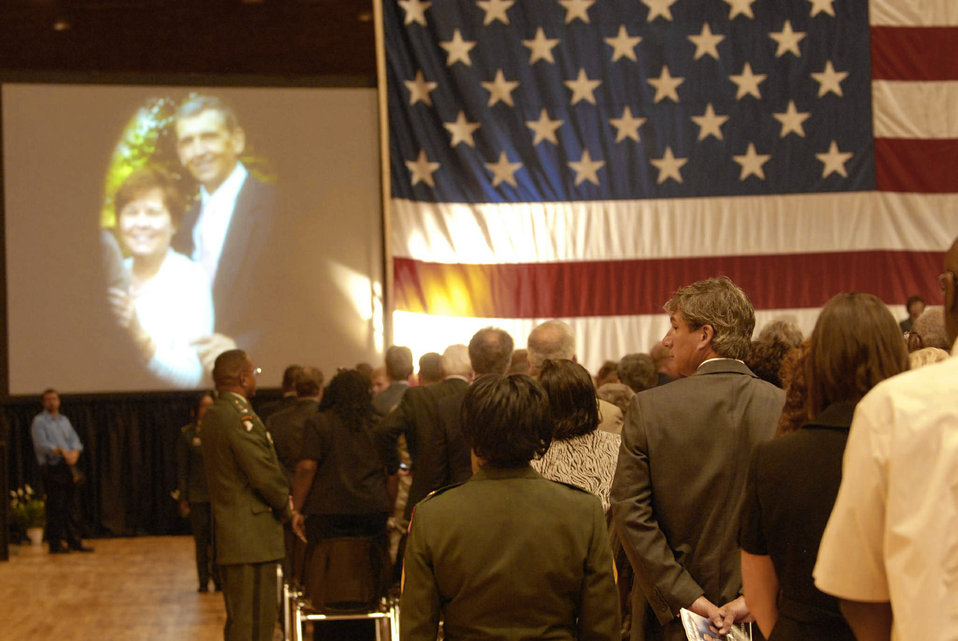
Couple remembered as 'best this nation has to offer'

Air National Guard members, friends and family gather at the D.C. Armory June 29 in Washington, D.C., to remember retired Maj. Gen. David Wherley, the former commanding general for the D.C. National Guard, and his wife, Ann, who were killed during a June 22 Metro train collision.